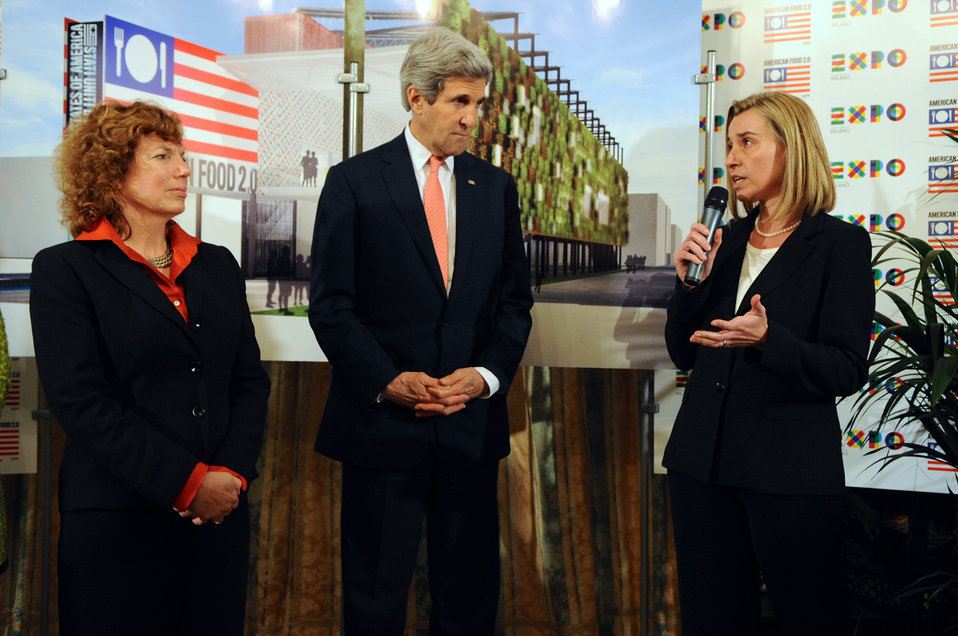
Italian Foreign Minister Mogherini Salutes U.S. Participation in Milan Expo 2015

Italian Foreign Minister Federica Mogherini, joined by U.S. Secretary of State John Kerry and Embassy Rome Deputy Chief of Mission Kathleen Doherty, highlights an upcoming U.S. food pavilion at the Milan Expo 2015 during an appearance in Rome, Italy, on March 27, 2014.